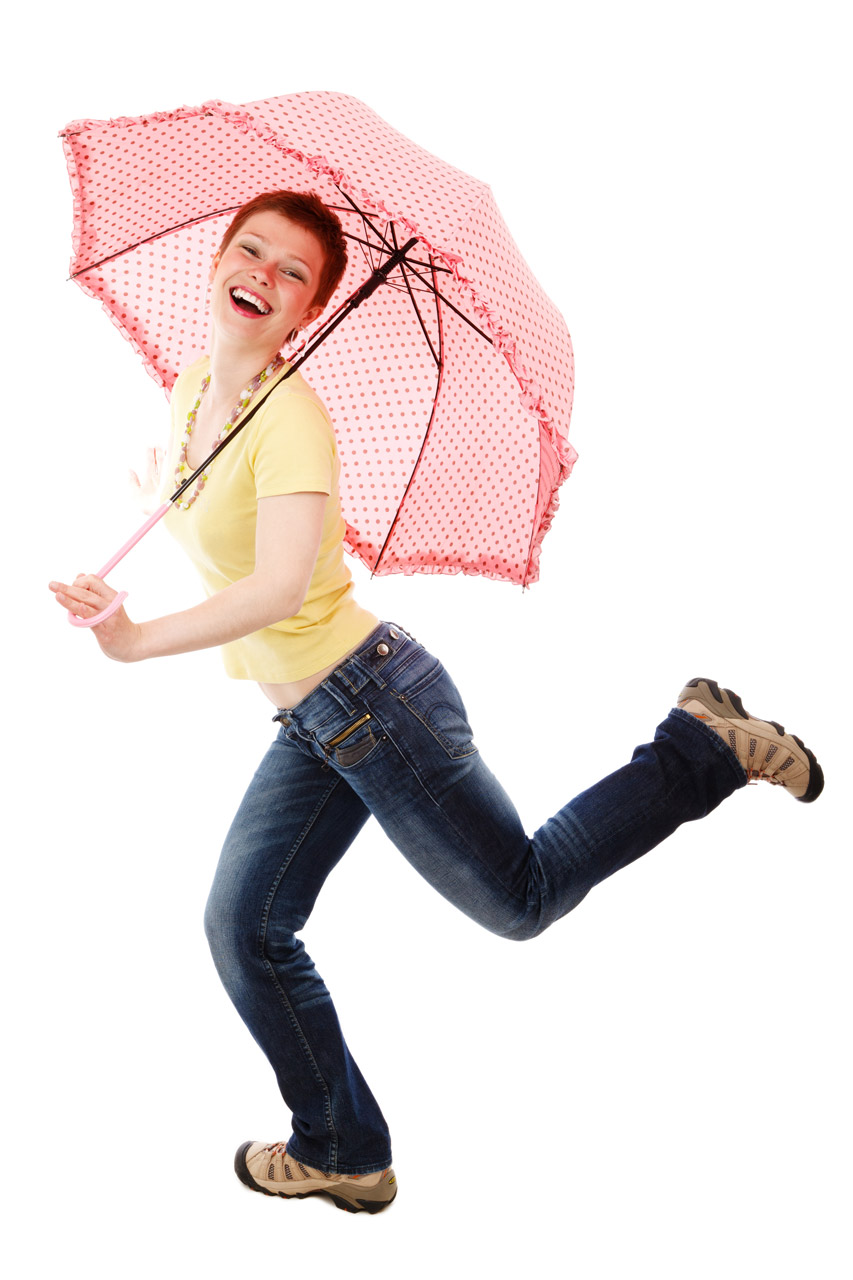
Dancing in the rain

Young woman dancing in the rain isolated on white background.